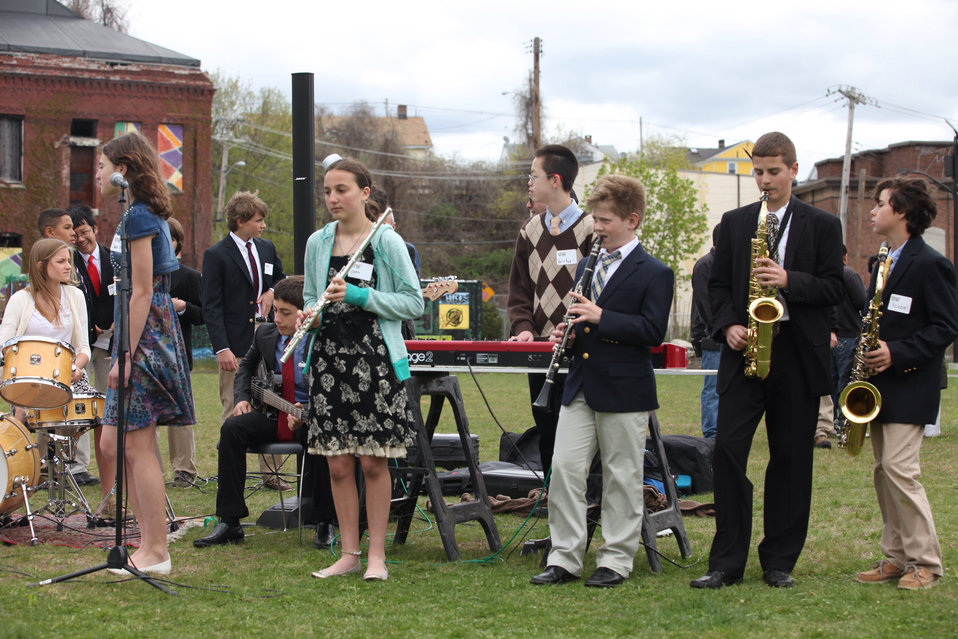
Wheeler Middle School Jazz Band

The Wheeler Middle School Jazz Band preformed at the designation and led the crowd in 'This Land Is Your Land.'